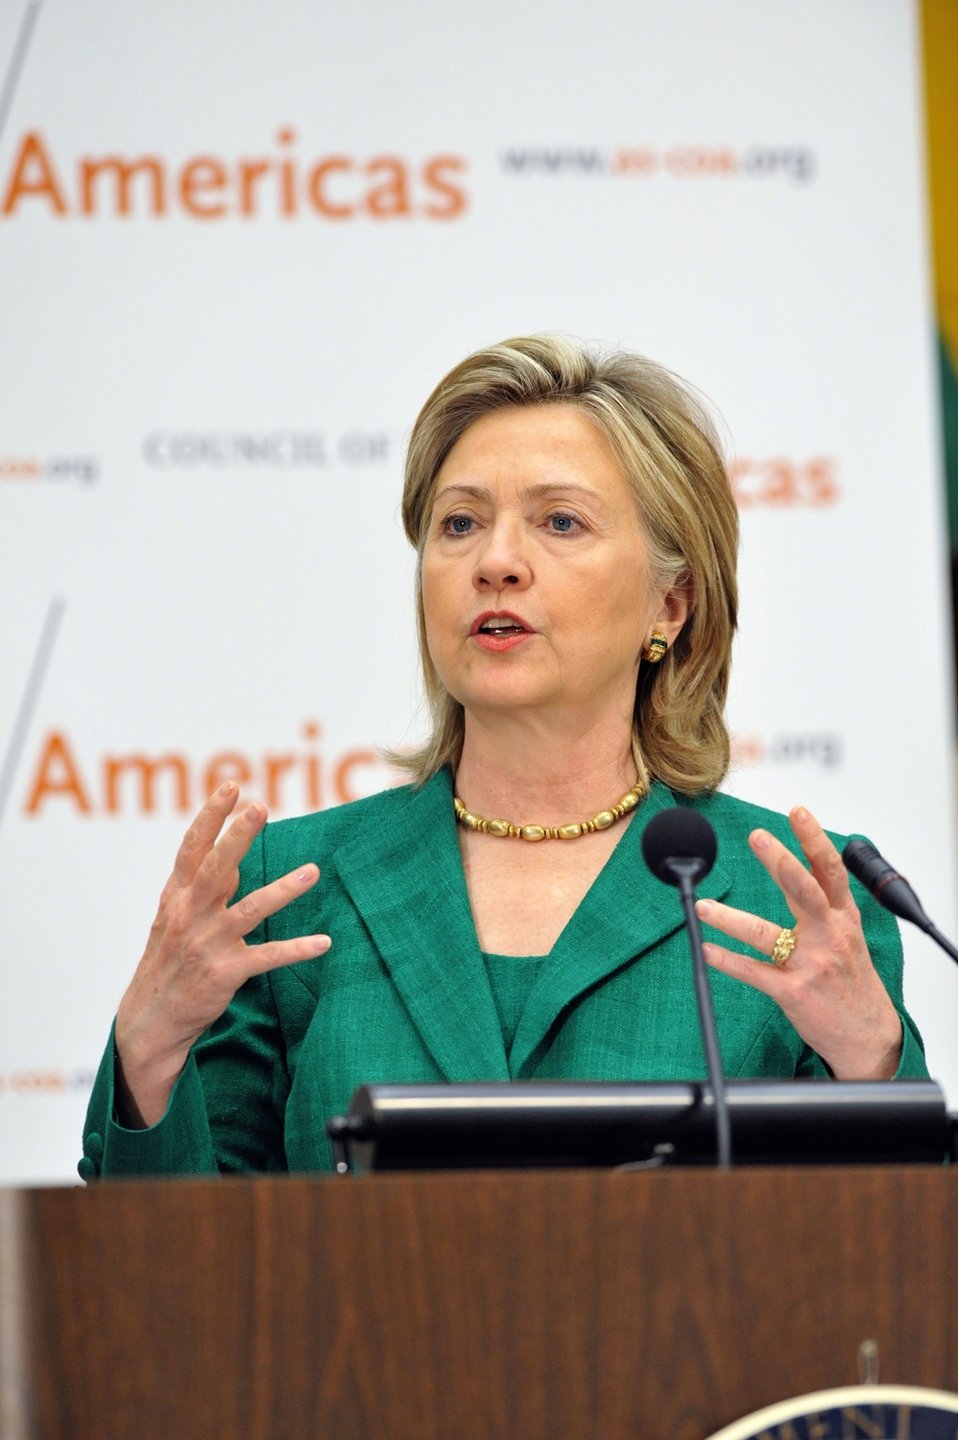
Secretary Clinton Delivers Remarks at the 40th Washington Conference on The Americas

U.S. Secretary of State Hillary Rodham Clinton delivers the welcoming remarks at the 40th Washington Conference on the Americas in the Loy Henderson Conference Room at the U.S. Department of State, Washington, D.C., May 12, 2010.